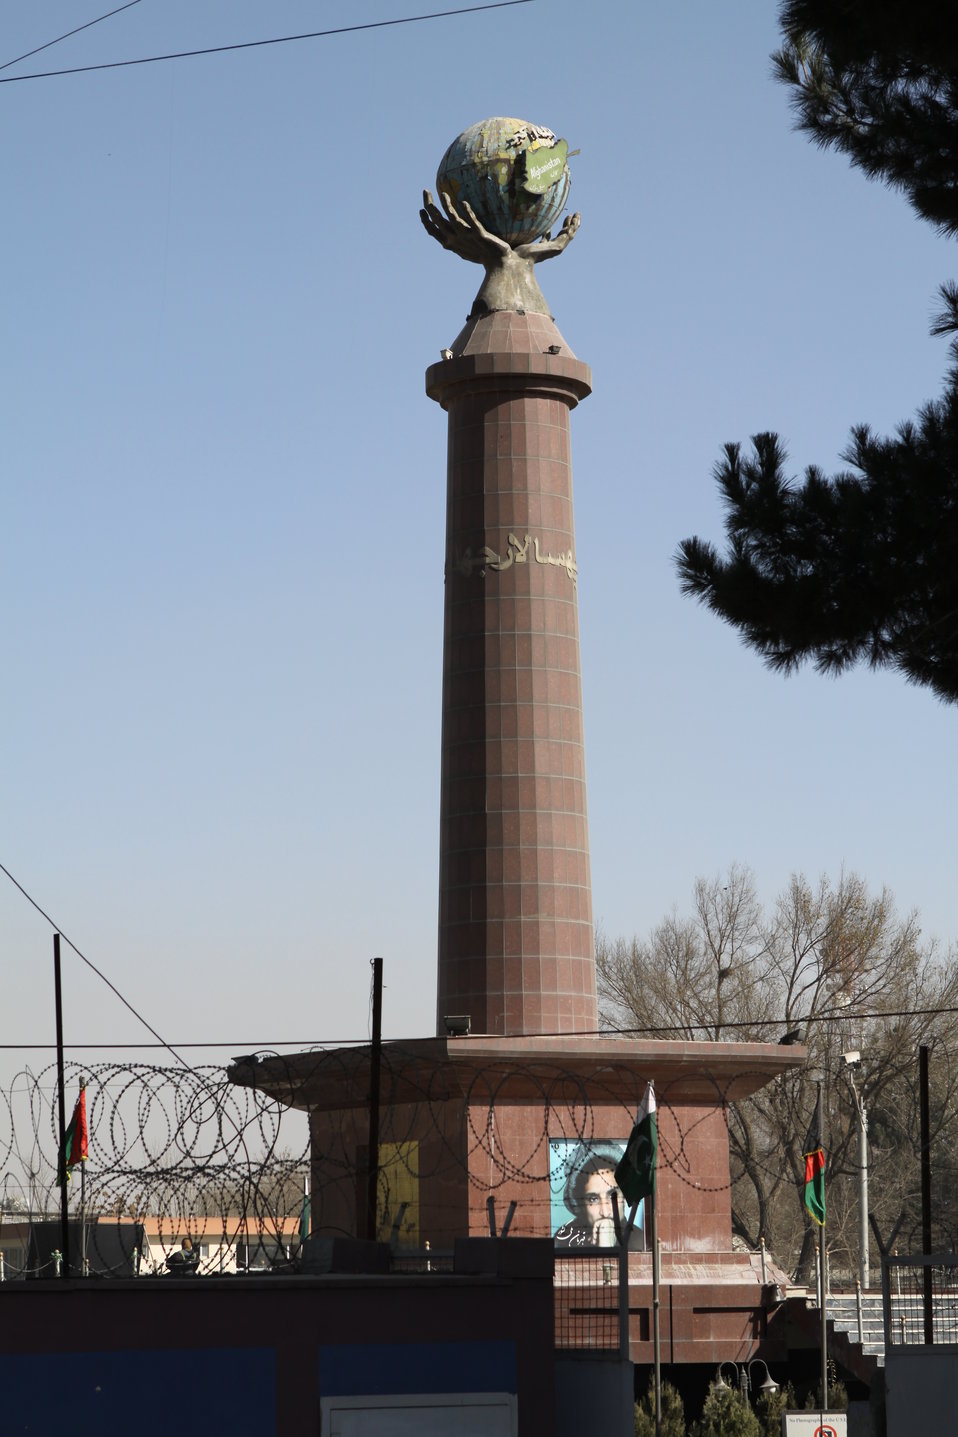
Community Health Workers Celebrated

Kabul, Afghanistan | December 5, 2010 — In support of the United Nations designated International Volunteer Day for Economic and Social Development, Afghanistan’s Ministry of Public Health celebrated its annual Community Health Worker Day today. Acting Minister of Public Health Dr. Suraya Dalil, USAID Senior Deputy Mission Director Robert Hellyer, other government officials, and international donors joined in recognizing the critical contribution of community health workers in Afghanistan and encouraging them to continue their voluntary support to their communities.
The event praised the contributions of the more than 22,000 volunteers throughout the country who deliver community level health-education, counseling, and services out of village health posts located in private homes. The Ministry of Public Health envisioned that community-based healthcare programs will actively encourage communities and families to adopt healthy lifestyles and behaviors, and provide families access to high quality and socially acceptable preventative medicine and life-saving services.
“We have 22,000 community health workers in Afghanistan that are able to implement the basic and standard medicines. They all have been trained through a job description,” said Minister Dalil. Addressing the health workers, she added, “I am proud and feel powerful that I have people like you.”
USAID-funded health projects collaborate closely with the Ministry of Public Health to improve the health and nutritional status of Afghans, provide quality primary healthcare, and promote healthy behaviors at the community and household-levels. USAID supported the training of more than 9,000 of the volunteer community health workers currently working in Afghanistan.
“On behalf of the American people, I congratulate the Community Health Workers for their diligence to gain the skills and knowledge necessary to serve their communities in this important role,” said USAID Senior Deputy Mission Director Hellyer. “USAID strongly supports community based health care and believes that quality community-based health services are essential to reaching Afghanistan’s Millennium Development Goals.”
To support the Basic Package of Health Services, USAID assisted in developing the community health worker training manual, helped train community health worker supervisors and master-trainers, facilitated in-service training, and produced and developed reporting tools, job aids, and education materials.